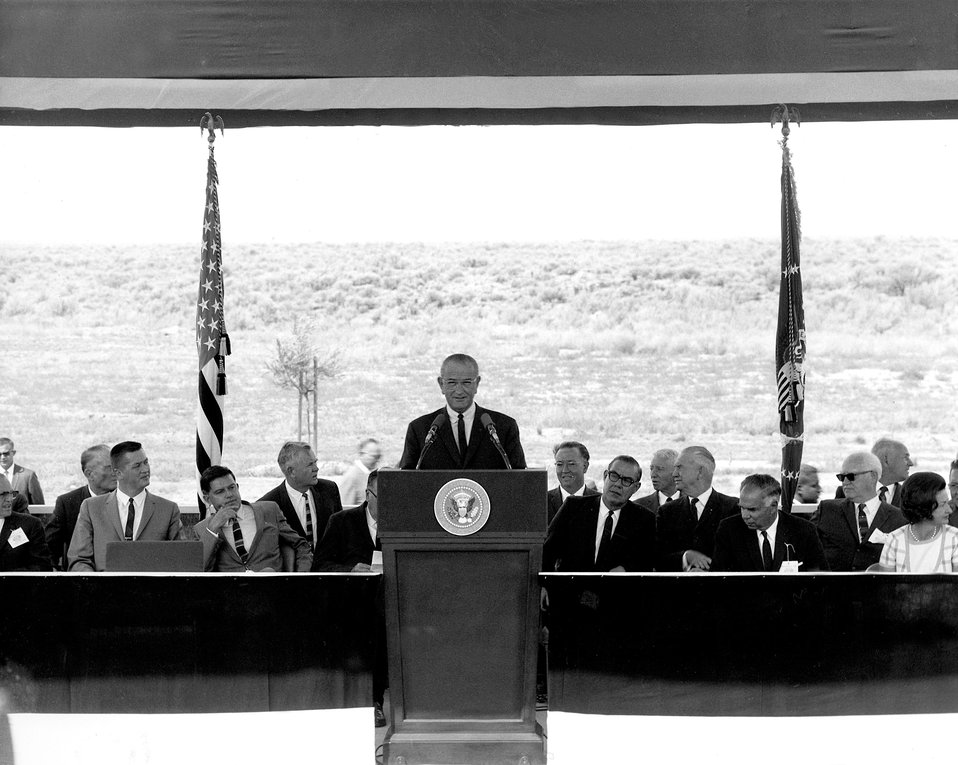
President Lyndon B. Johnson in Idaho.